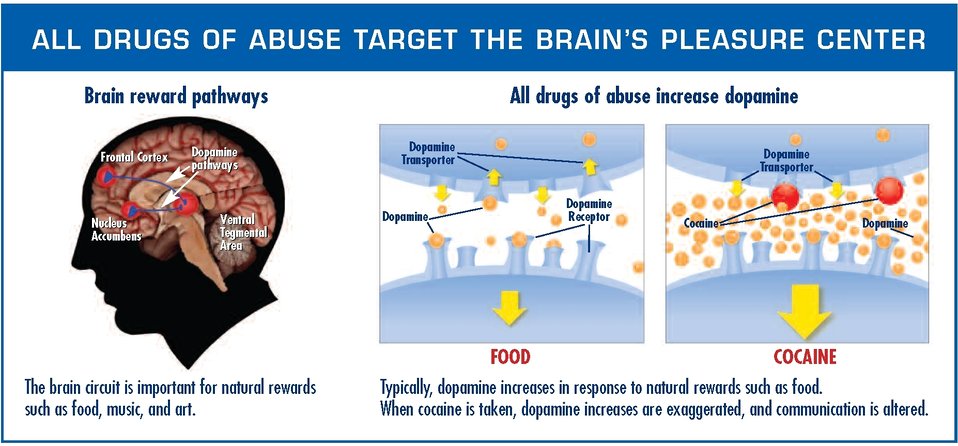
Drugs of Abuse

This image illustrates greater stimulation of the brain's pleasure circuit by drugs compared to natural rewards (food). The large dopamine response increases the likelihood that the user will repeat the experience.